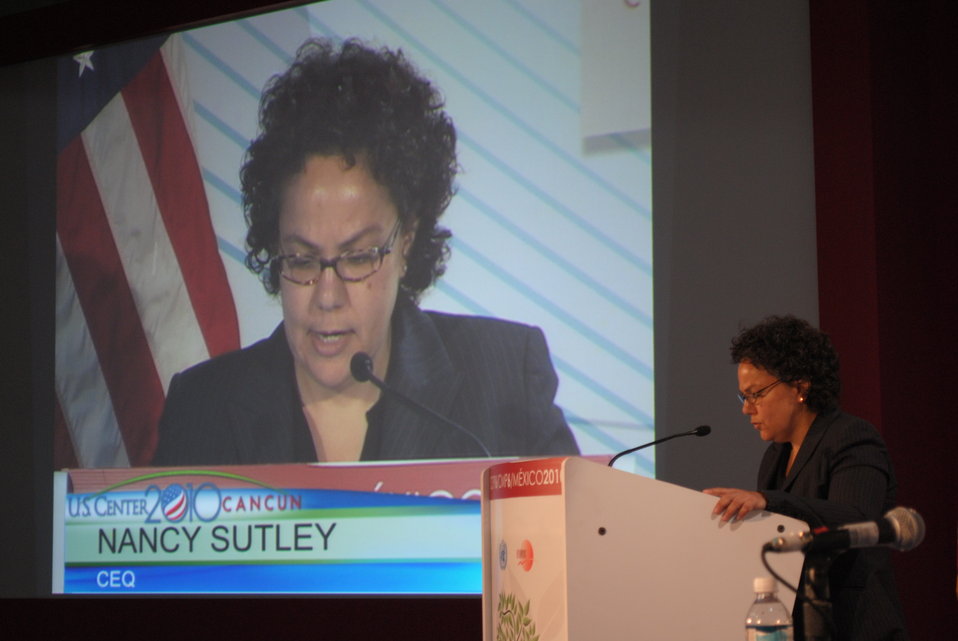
CEQ's Nancy Sutley Addresses the U.S. Center

Nancy Sutley of the Council on Environmental Quality addresses the U.S. Center at COP-16 in Cancun, Mexico, on December 8, 2010.